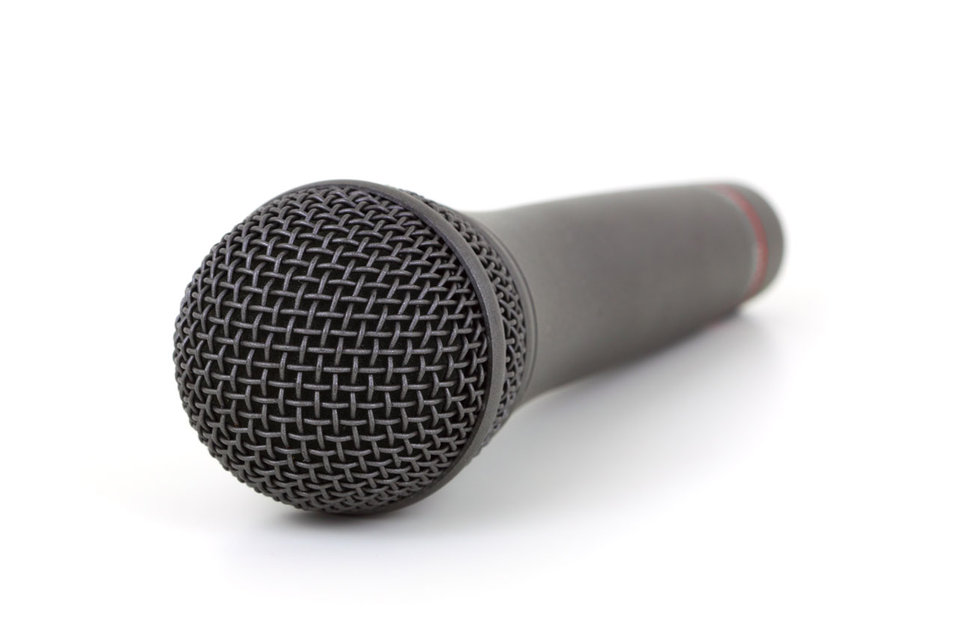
Wireless microphone isolated on white background.